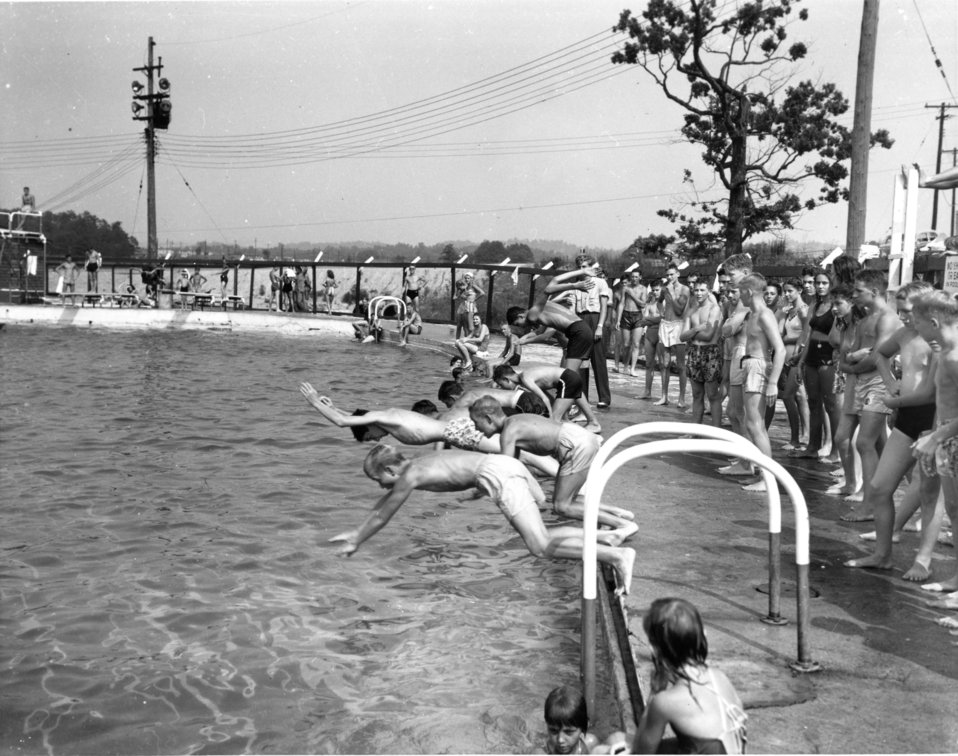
Recreation at Oak Ridge